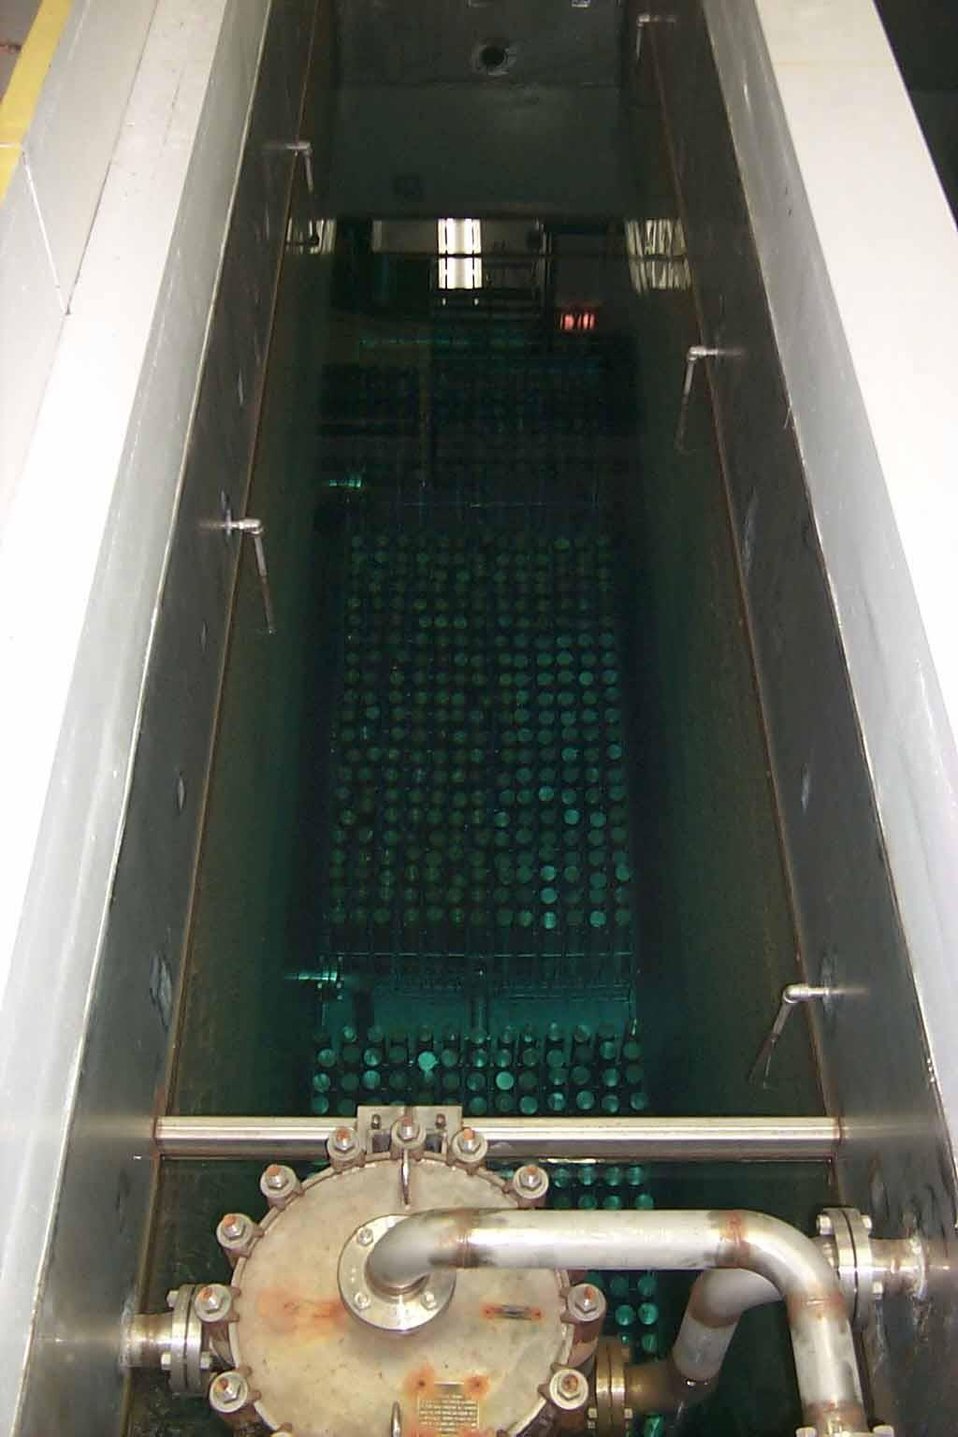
CAPSULES CONTAINED IN POOL CELL 7, PHOTOGRAPHED UNDER NORMAL LIGHTING.

PHOTOGRAPHING THE POOL CELL 7 CAPSULES UNDER NORMAL LIGHTING CONDITIONS DEMONSTRATES THAT THE BLUE GLOW PRODUCED BY THE CHERENKOV EFFECT, ALTHOUGH SOMEWHAT VISIBLE, IS MUCH LESS APPARENT WITH THE OVERHEAD ROOM LIGHTS ON.